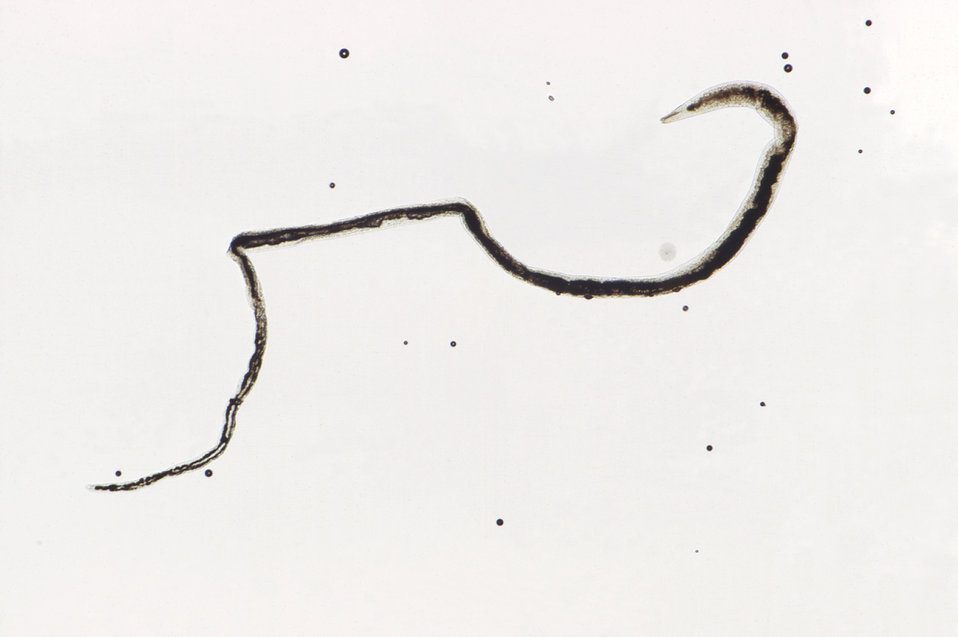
This magnified view reveals a female Schistosoma mansoni trematode. Take a look at PHIL 11193, which depicts a male S. mansoni, and PHIL 11194, which depicts two mating worms. in which case you can see the thinner female cradled inside the thicker male worm's gynecophoral canal.